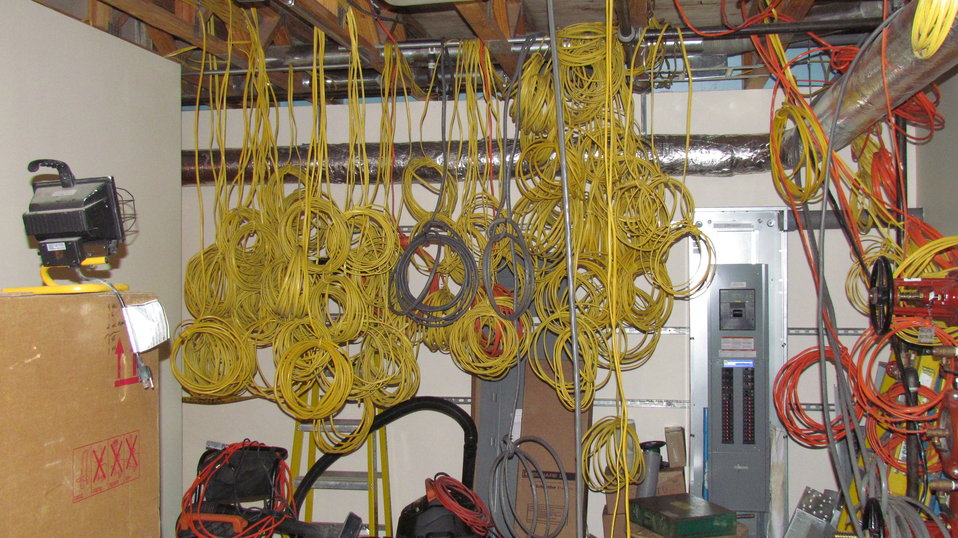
Individual electric circuit wires that will be connected to breaker boxes in basement of facility. A large number of circuits were required so that each can be controlled and metered individually. This will enable researchers to accurately measure the energy consumption of various end-uses of electricity.